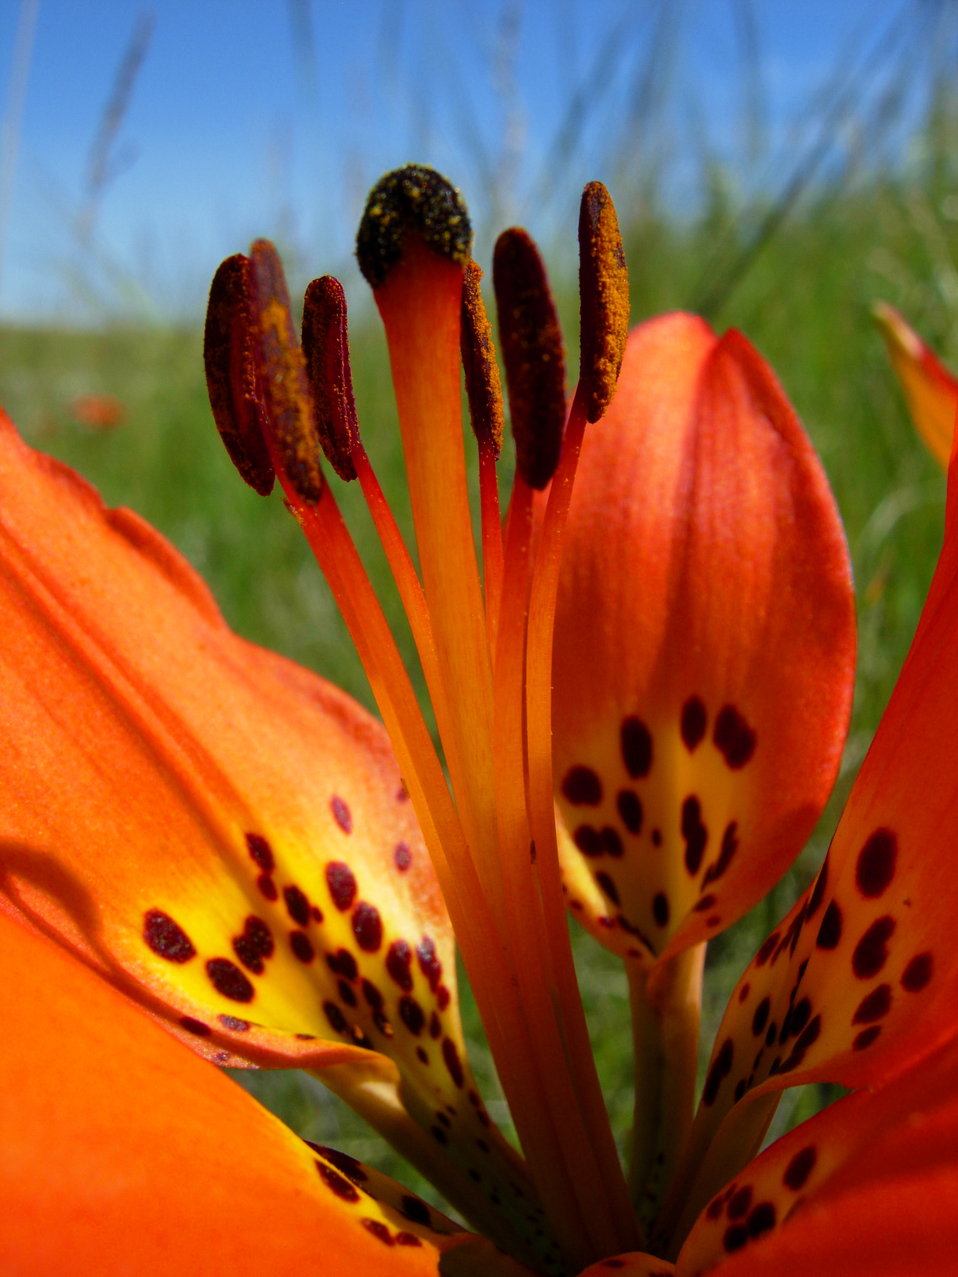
Prairie Lily

One of the many natives found in bloom on Upper Souris National Wildlife Refuge in North Dakota in the summer.